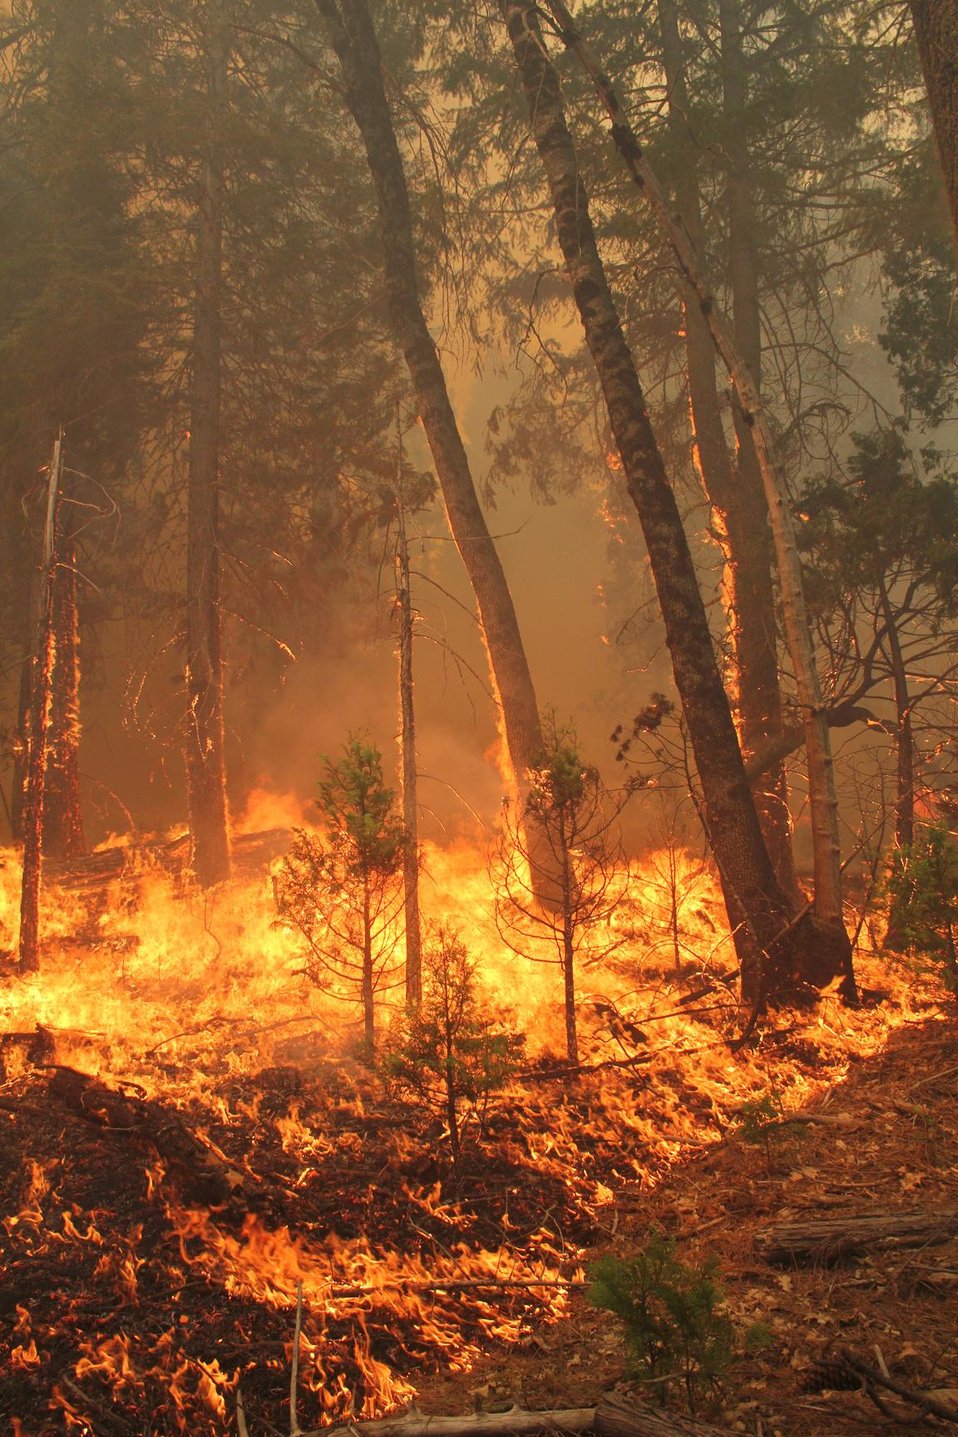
The Rim Fire in the Stanislaus National Forest near in California began on Aug. 17, 2013 and is under investigation. The fire has consumed approximately 192,737 acres and is 30% contained.